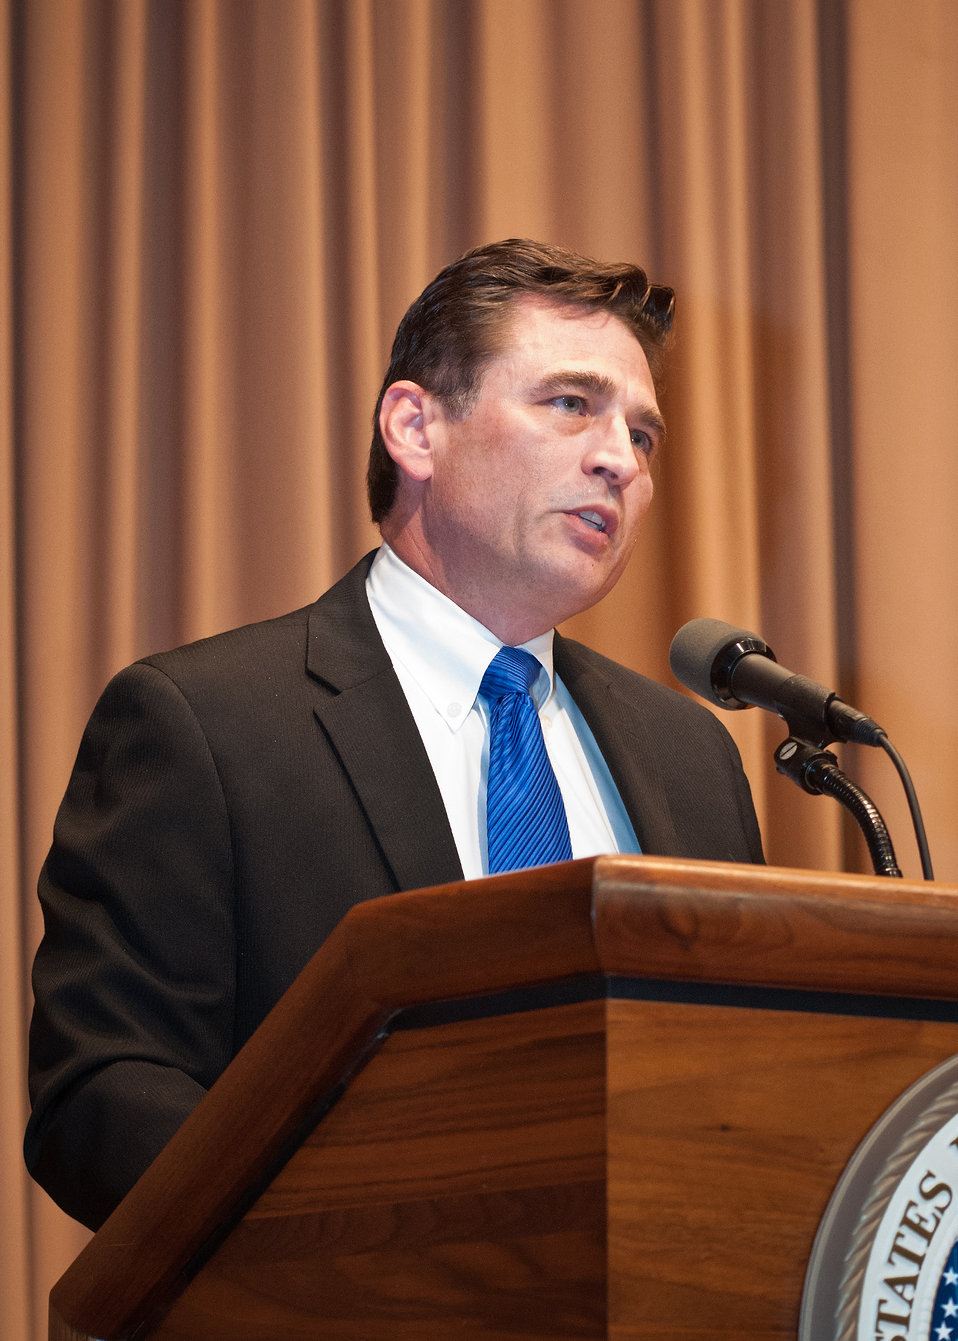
Agriculture Principal Deputy Counsel and Master of Ceremonies Frederick Pfaeffle welcomes employees and guests to the U.S. Department of Agriculture (USDA) 2012 Hispanic Heritage Month in Washington, D.C. on Thursday Sept. 20, 2012.